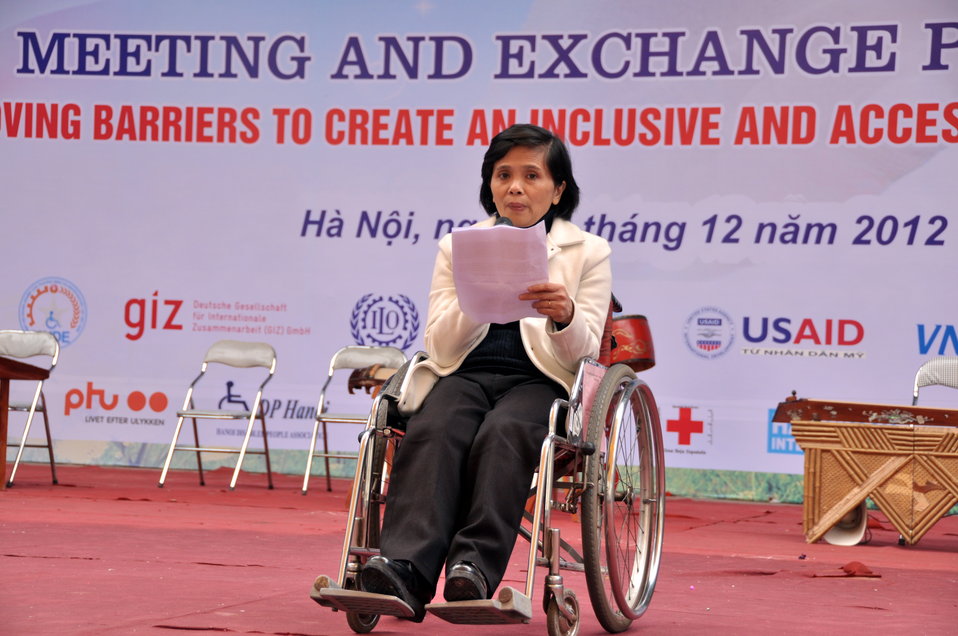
USAID joins celebration of International Day of Persons with Disabilities in Hanoi, Vietnam

December 2, 2012